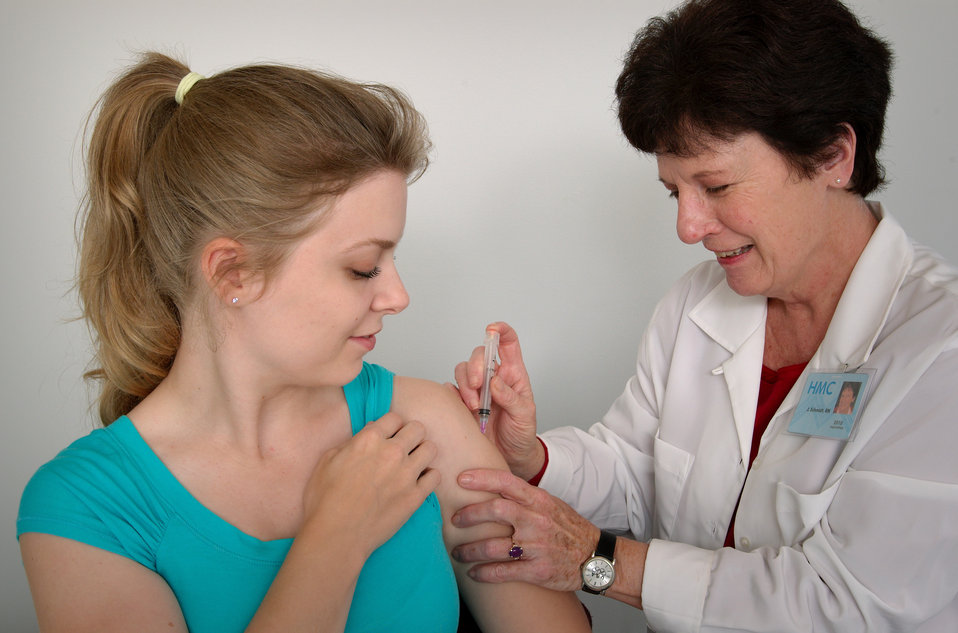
This photograph depicted a qualified nurse who was administering an intramuscular vaccination into the shoulder muscle of an adult woman's left arm. With her free hand, the nurse was stabilizing the injection site.